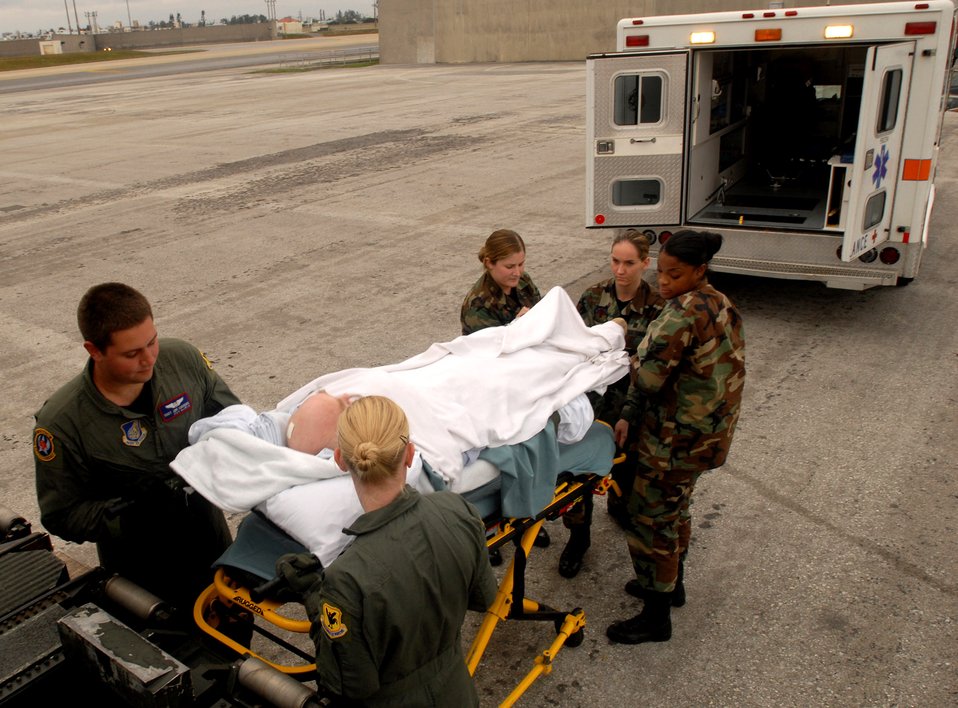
Kadena Airmen aerovac patients in need

Airmen from the 18th Aeromedical Evacuation Squadron, the 18th Medical Operations Squadron and 18th Aerospace Medicine Squadron work together to carry a patient onto a KC-135 Stratotanker Dec. 18 at Yokota Air Base, Japan, bound for Kadena Air Base, Japan. The patient will stay at the Camp Lester Naval Hospital for the night to receive critical care before being transported to Travis Air Force Base, Calif., for further treatment. Members of the 18th AES travel throughout the Pacific picking up critical patients and transporting them to hospitals that can meet their needs.